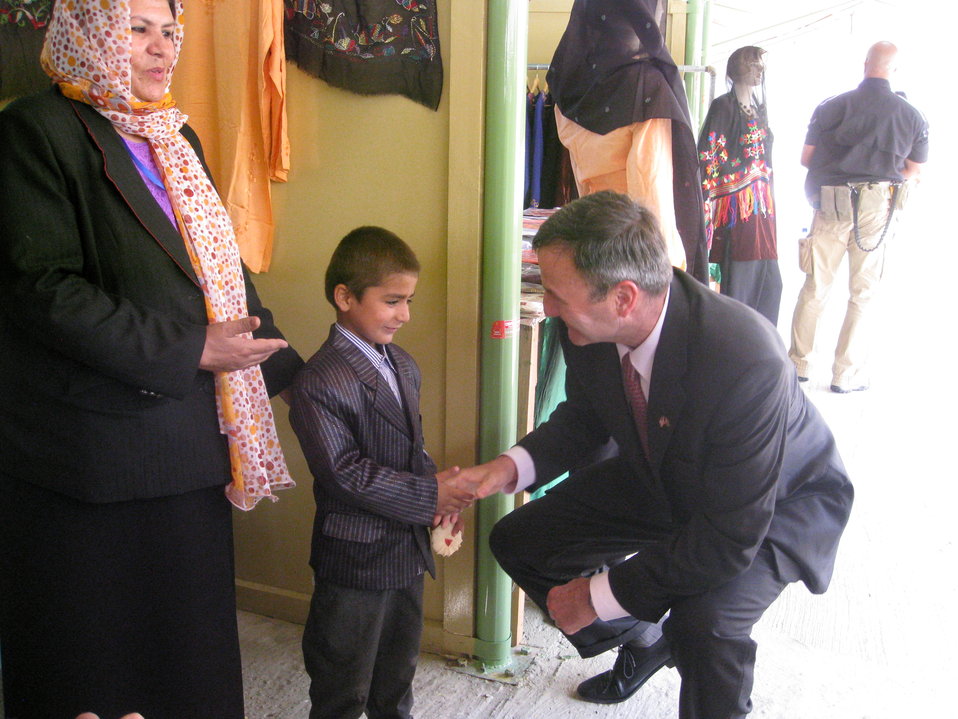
AgFair future businessman

On May 20, 2009, Ambassador Eikenberry joined government officials, farmers, agribusiness representatives, and international investors at the launch of the Kabul International AgFair on May 20. Held at the Ministry of Agriculture, Irrigation and Livestock’s Badam Bagh Demonstration Farm in Kabul, the fair showcases Afghanistan’s wealth of fresh produce, provides lucrative business opportunities, and demonstrates innovative agricultural technologies. It is expected to attract more than 50,000 participants from May 21-22.

U.S. Ambassador Karl Eikenberry and Afghan Acting Minister of Agriculture, Irrigation and Livestock (MAIL) Saleem Kunduzi gave opening remarks at the AgFair’s launch. “The United States Government is co-sponsoring national and regional AgFairs like this one to encourage trade and generate business opportunities in the agriculture sector,” Ambassador Eikenberry said. “In a country that is 80 percent rural, promoting licit crops and agriculture sector job creation are two essential steps to successful development in the region.”

Member of Parliament Abdul Salam Qazizada offered bold remarks, stating that we need to engage more with farmers in every province throughout the country.

Following the ceremony, Ambassador Eikenberry visited a number of vendors at the fair with Acting Minister Kunduzi and Mr. Qazizada. In speaking with farmers displaying their produce, Ambassador Eikenberry found that many have increased yields due to USAID assistance, have found regional buyers for their produce, and were grateful for the opportunities that AgFair provides.

Ambassador Eikenberry also discussed the state of agriculture with Minister Kunduzi and Mr. Qazizada. They agreed that while some progress has been made, there is a great deal more work to be done. Ambassador Eikenberry reiterated from his speech that USDA Secretary Vilsack recently met with Minister Rahimi to discuss the U.S. commitment to agriculture development. In a message to the Afghan public, Secretary Vilsack stressed that the USG aims to play a leading role by bringing more agriculture experts to the provinces and supporting agriculture research such as the Badam Bagh Demonstration Farm. Additionally, he looks “forward to working together to increase agricultural productivity, which will result in more jobs throughout the entire value chain, and a better quality of life for the citizens of Afghanistan.”

The United States Government is proud to support Afghan agriculture. Since 2002, America has provided more than 1 billion dollars in assistance to agriculture and rural development. AgFairs like the one Ambassador Eikenberry visited creates awareness of Afghanistan’s expanding agricultural sector, promotes new agricultural technologies that increase productivity, and provides a forum to connect farmers to local and international buyers. These results will contribute to Afghanistan’s prosperity.

We are already seeing the results of these fairs. Since 2007, Afghanistan’s agricultural fairs have attracted more than 500,000 participants from across the nation and the world, generated millions of dollars in sales of the country’s high-value produce, and provided participants with a competitive edge in one of the fastest growing markets in Central Asia.

As Ambassador Eikenberry stated, “The word is out – with over 180 international businesses represented at this fair, it is obvious that Afghanistan has sparked the interest, and appetite, of the world.”